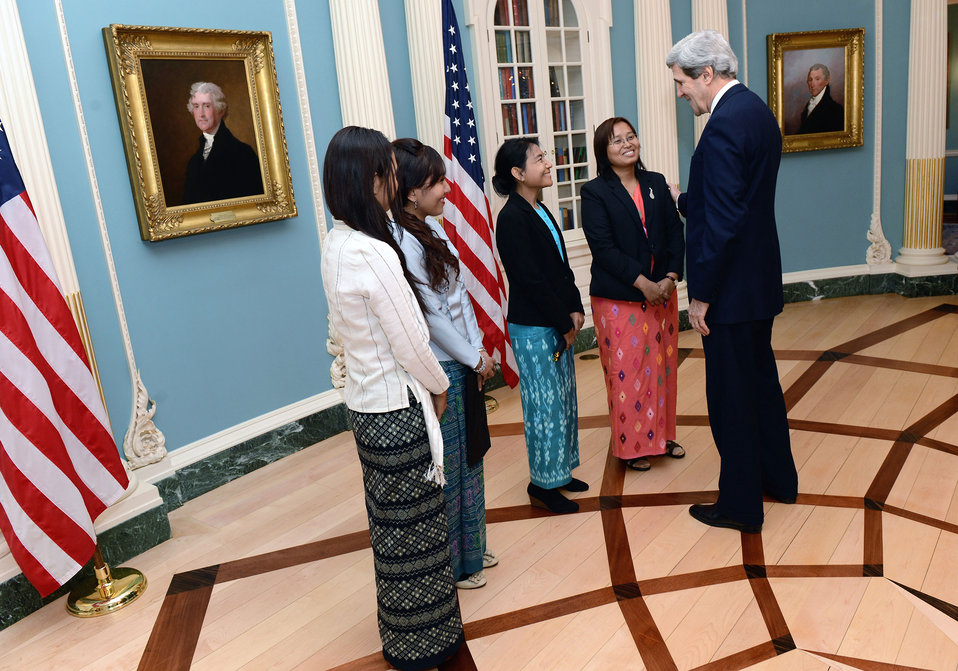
Secretary Kerry Meets With Burmese Women Leaders

U.S. Secretary of State John Kerry meets with Burmese women leaders at the U.S. Department of State in Washington, D.C., February 6, 2013.